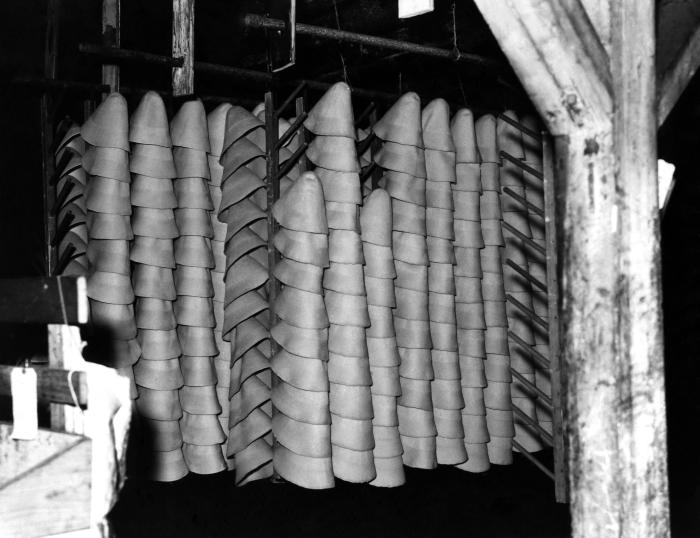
This historical image was provided by the Center for Disease Control's (CDC), National Institute for Occupational Safety and Health (NIOSH). The photograph showed rows of newly-formed hats, which were in the process of drying on racks, prior to being formed into their final shape. The image was published in the 'Public Health Bulletin', No. 263, 1941, in an article entitled, 'Mercurialism and its Control in the Felt-Hat Industry". Working with newly processed fur, which had been 'carroted', or fixed with mercury nitrate, workers could be exposed to airborne mercury, thereby, suffering the detrimental neurologic consequences from its inhalation. Using steam, which was integral to the hatters' industry, the airborne dissemination of this neurotoxic element was facilitated.